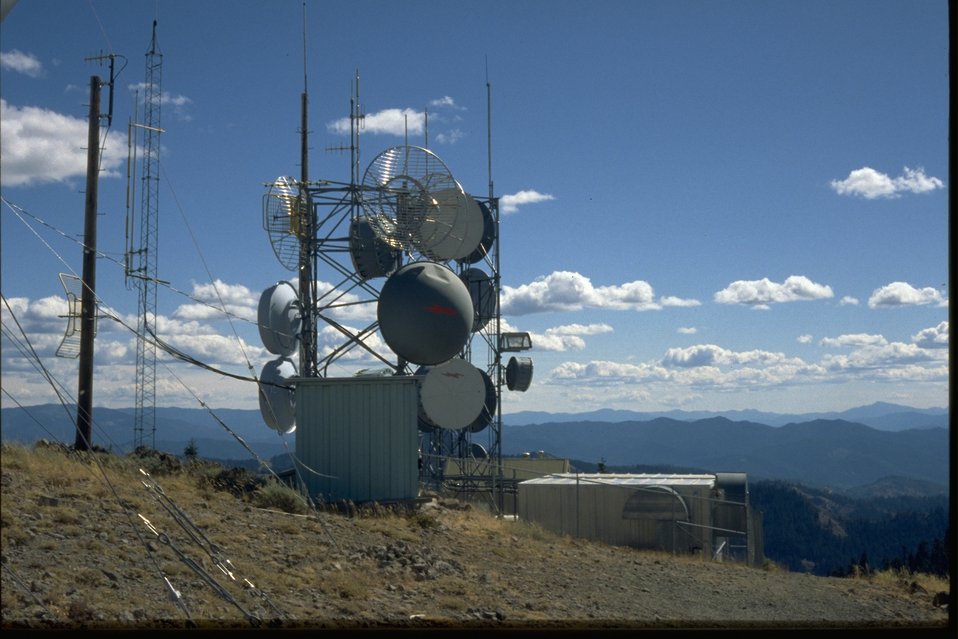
Communications equipment on Soda Mountain Summit.